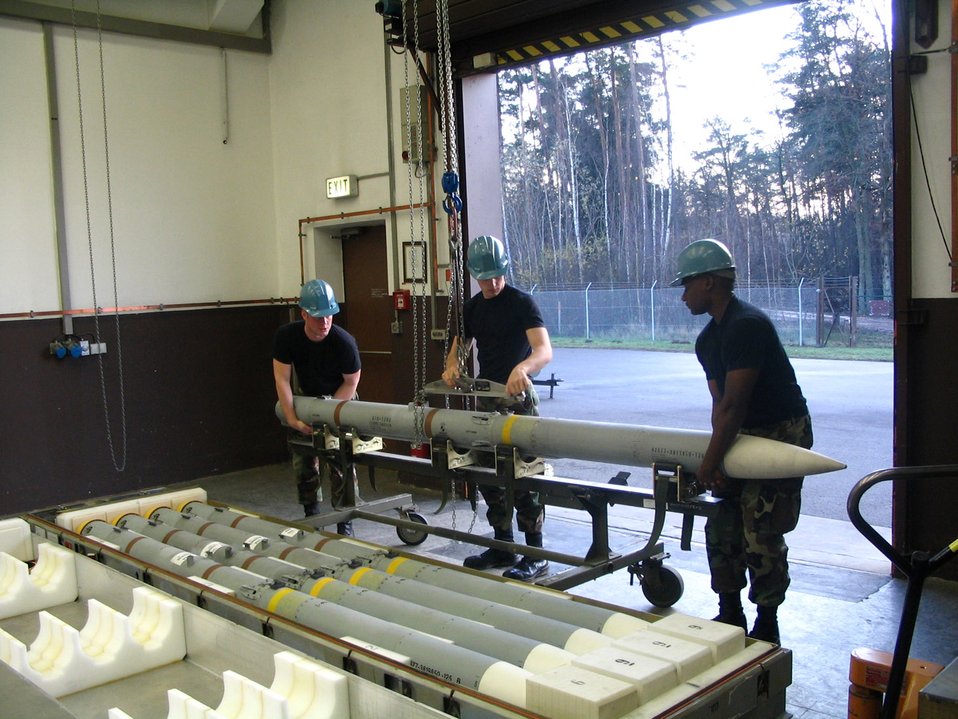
Missile overhaul creates big savings

Missile maintainers prepare to remove the rocket motor from an older AIM-120A advanced medium-range air to air missile. Removing the motor and placing it in a newer and more cabable AIM-120B or C model has saved the Air Force more than $31 million. These Airmen are from the 435th Munitions Squadron at Ramstein Air Base, Germany.